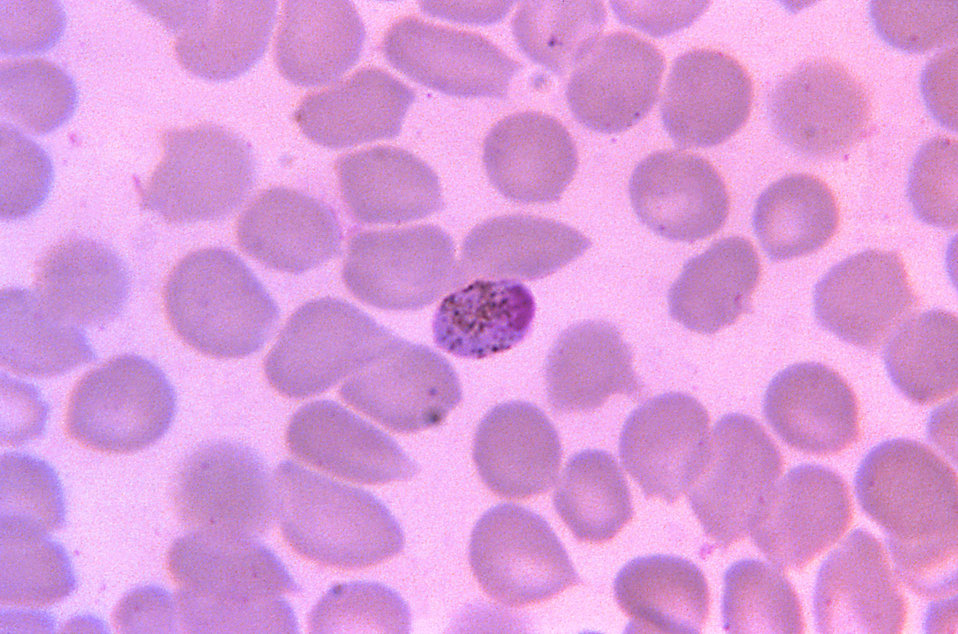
This thin film photomicrograph depicts a Plasmodium malariae macrogametocyte.